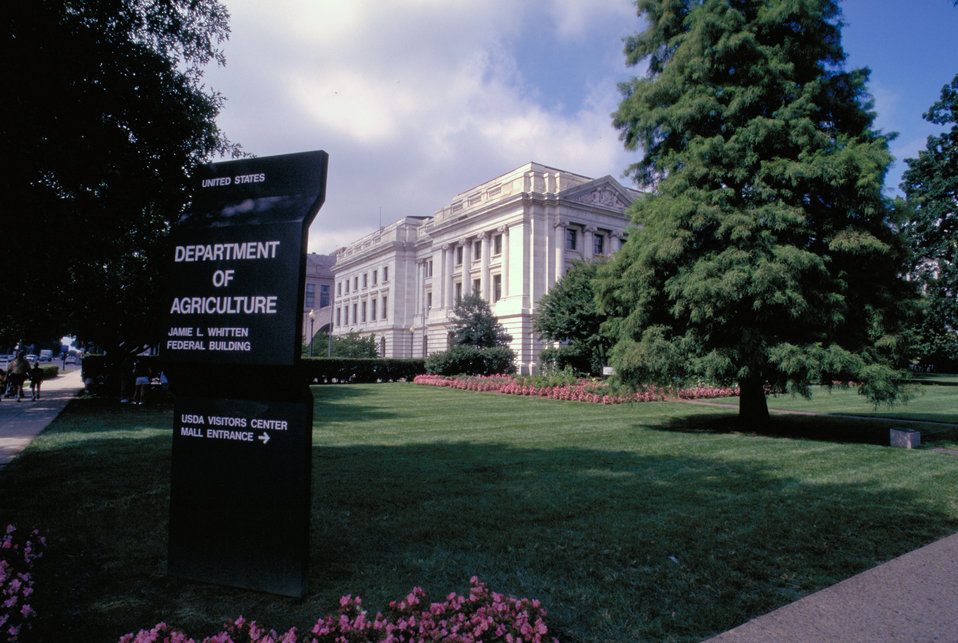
The Jamie L. Whitten, Federal Building, U.S. Department of Agriculture in Washington, D.C.